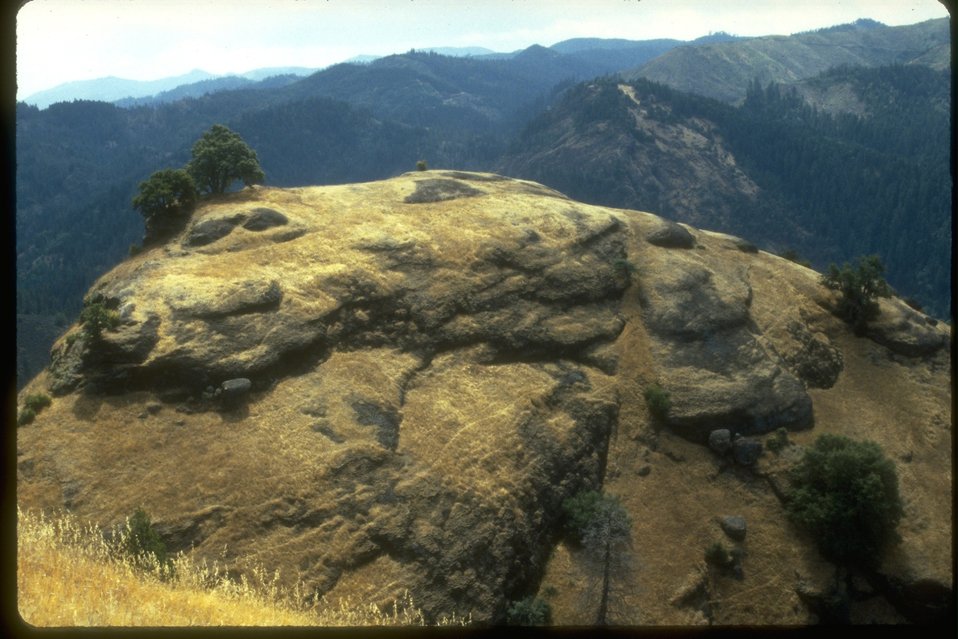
Cow Creek Bluffs.